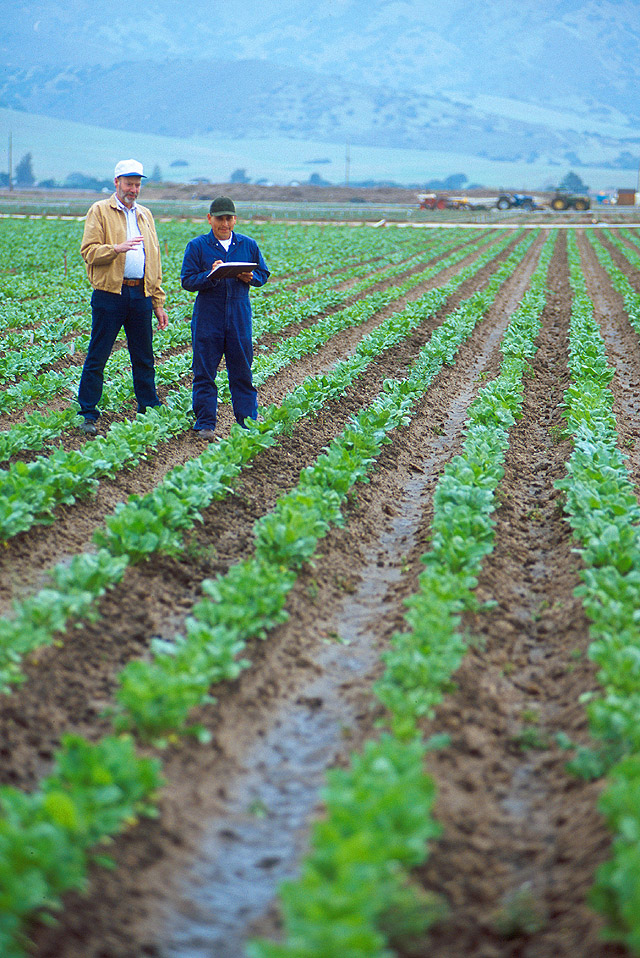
Sugar beets

Photo credit: USDA

Any benefits to agriculture from increased CO2 and a longer growing season may not be sufficient to offset losses from decreasing soil moisture and water availability due to rising temperatures and aquifer depletion